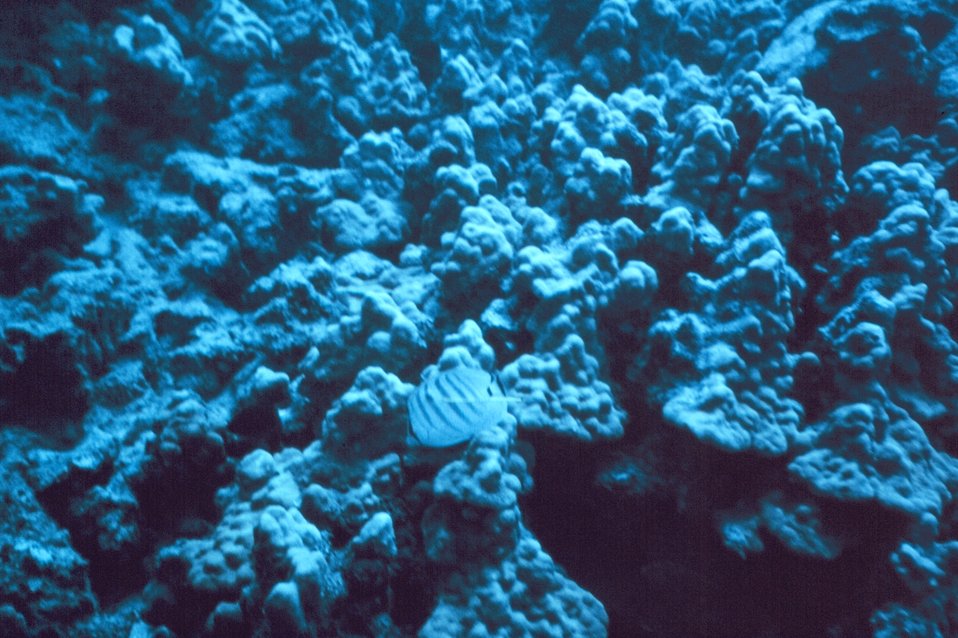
Chaetodon multicinctus - common butterfly fish. Note tag for migration studies.